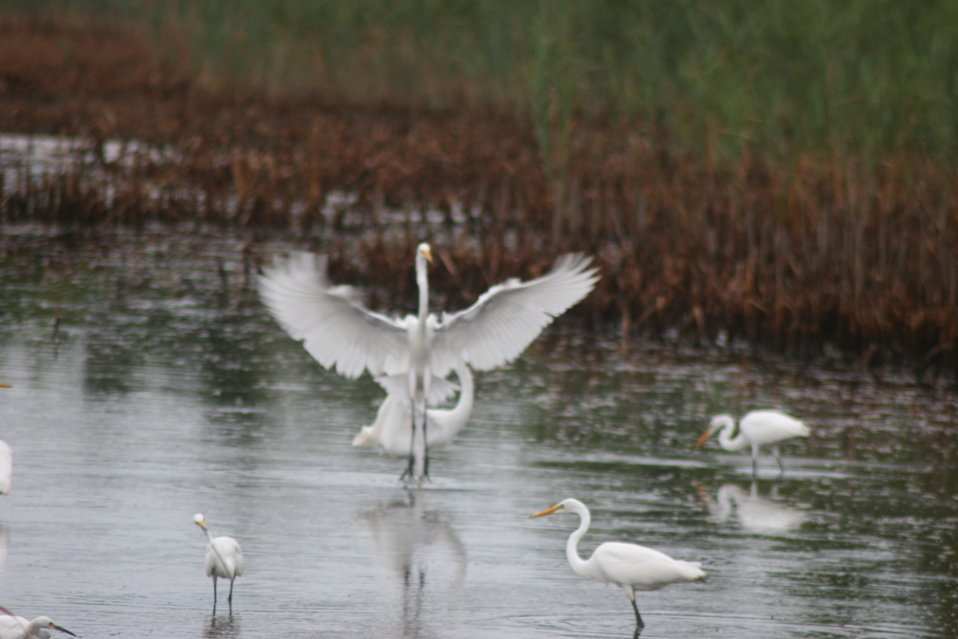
Egret at Prime Hook NWR